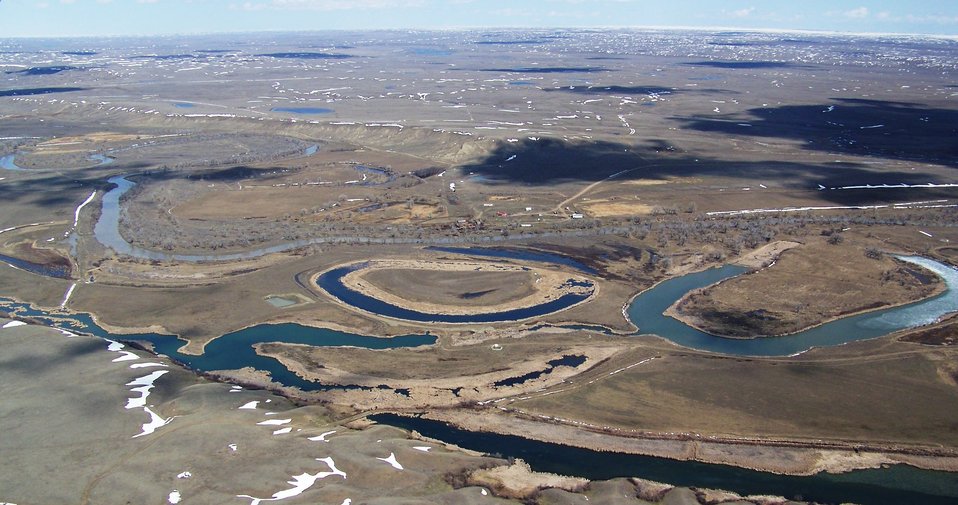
Aerial of McNeil Slough WPA

Aerial view of oxbow wetlands and the Milk River on McNeil Slough Waterfowl Production Area